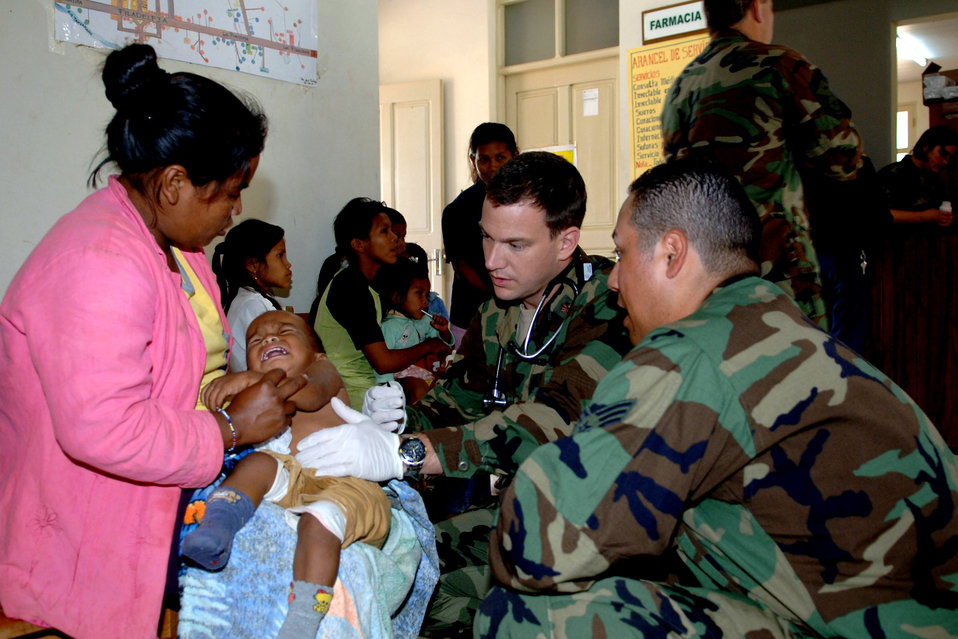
Air Force medics take medical mission to Bolivia

Maj. Scott Shepherd and Senior Airman Felipe Soto treat a 6-month old Bolivian boy who has a fever of 104 degrees during a Medical Readiness Training Exercise in Cobija, Bolivia. The two medics are part of a 30-member medical team in Bolivia treating underserved populations in the country. Major Shephers is assigned to the 152nd Medical Group in Reno, Nev., and Airman Soto is from the 163rd Medical Group.